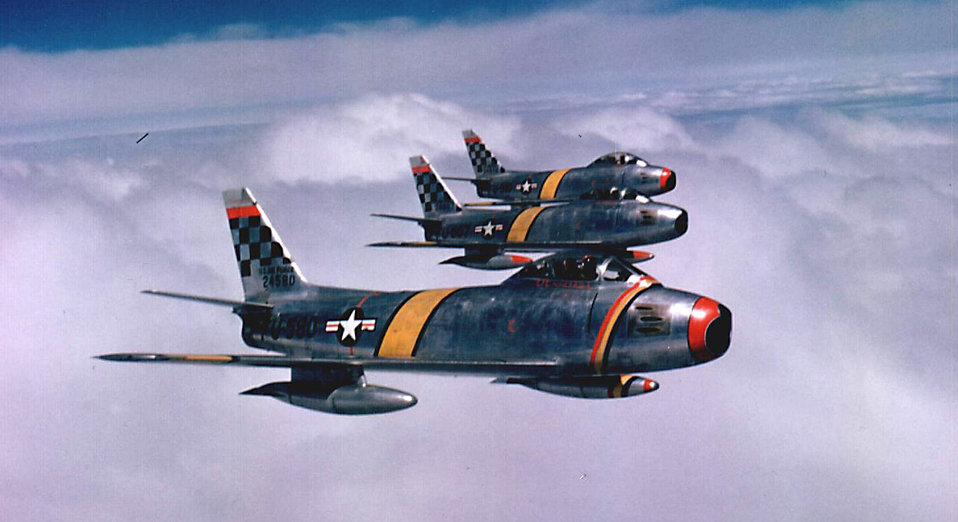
F-86 Sabres in Korea

Col. Benjamin O. Davis Jr., commander of the 51st Fighter Interceptor Wing, leads a three-ship F-86F Sabre formation during the Korean War in 1954. Col. Davis, a Tuskegee Airman, was one of the first African-American wing commanders.